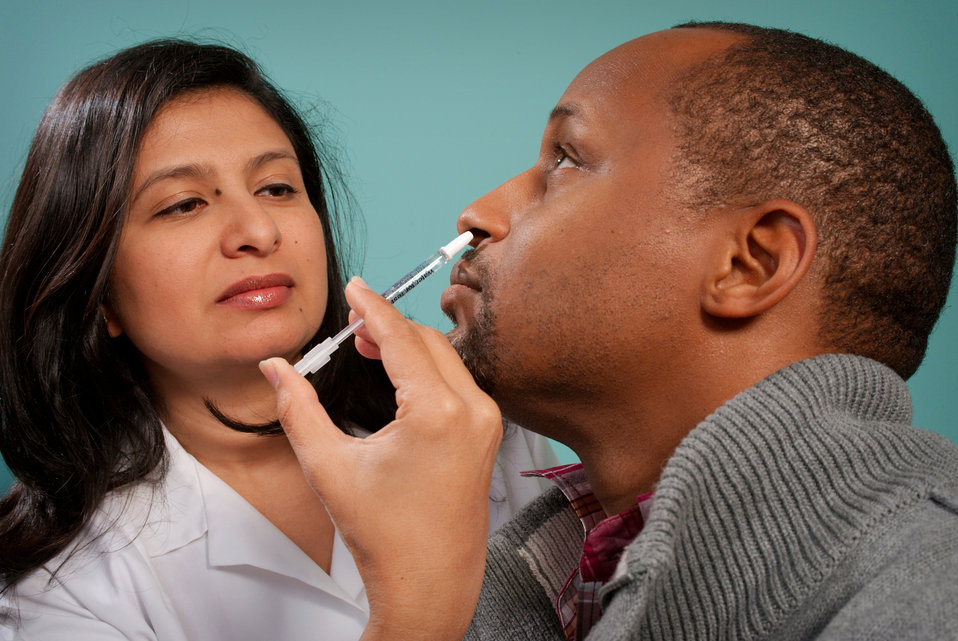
This 2009 image depicts a healthcare practitioner as she was administering the H1N1 live attenuated intranasal vaccine (LAIV) to an African-American man. Using a small syringe, she was delivering the vaccine mist into the man's left nostril.